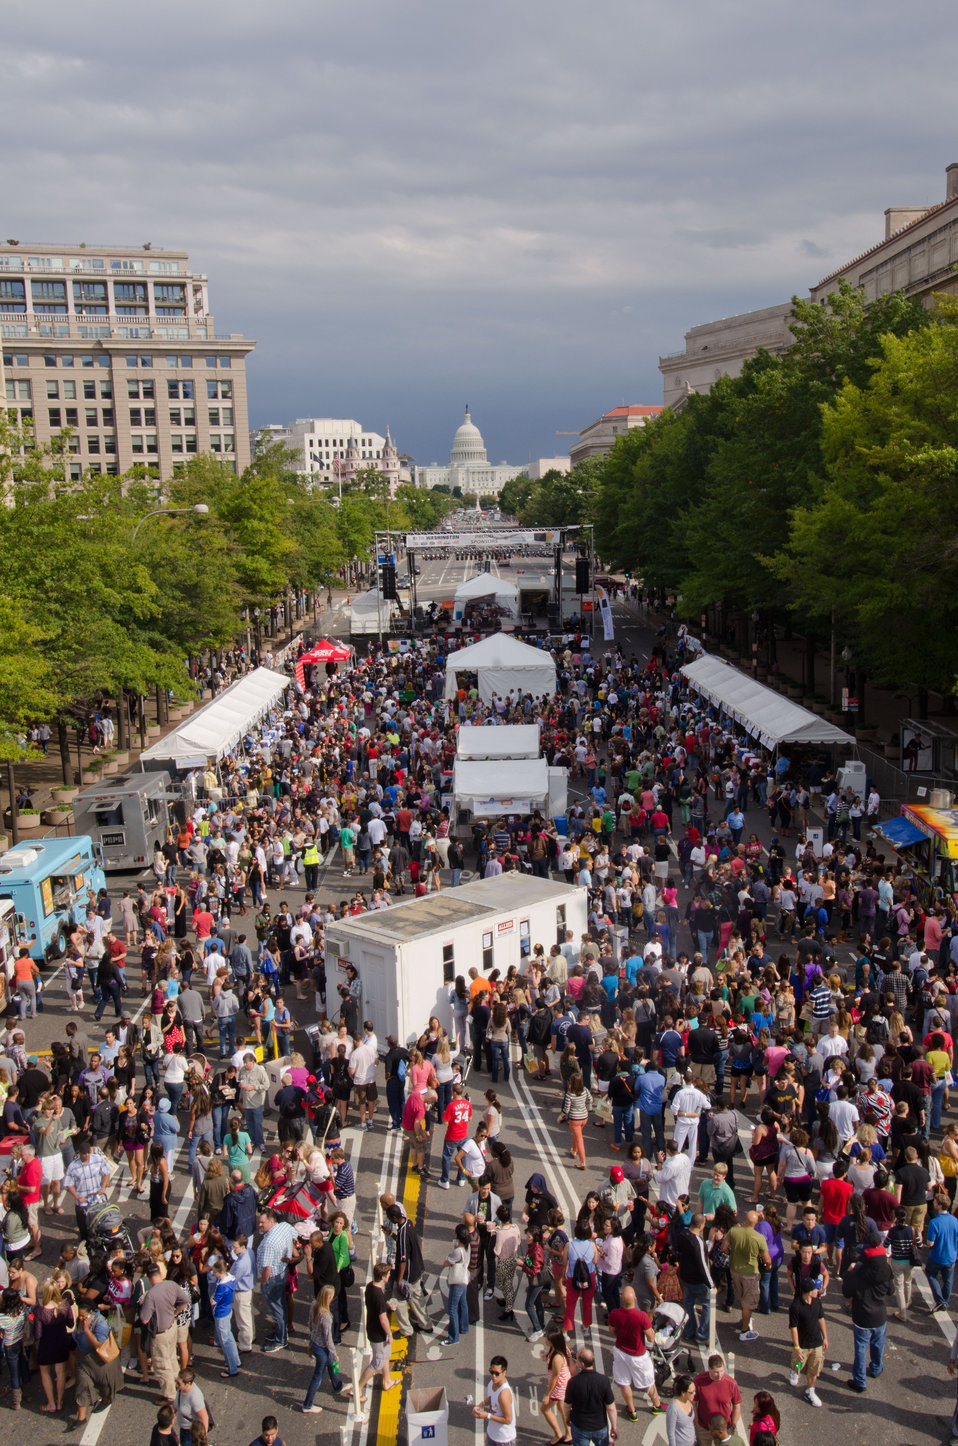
The Taste of D.C., event highlights more than 70 eateries, 30 specialty beer providers, the United Service Organization (USO) Metropolitan Washington, and live bands. It is anticipated that more than 500,000 people will attend over the course of the three-day event, which extends from the White House to the Capitol, along Pennsylvania Ave. in Washington D.C. on Saturday, October 6, 2012. Agriculture Food Safety and Inspection Service specialists present talks and cooking demonstrations. Agriculture’s mobile Discovery Zone is on hand to educate children and parents about the four main principals of food safety – clean, separate, cook and chill.